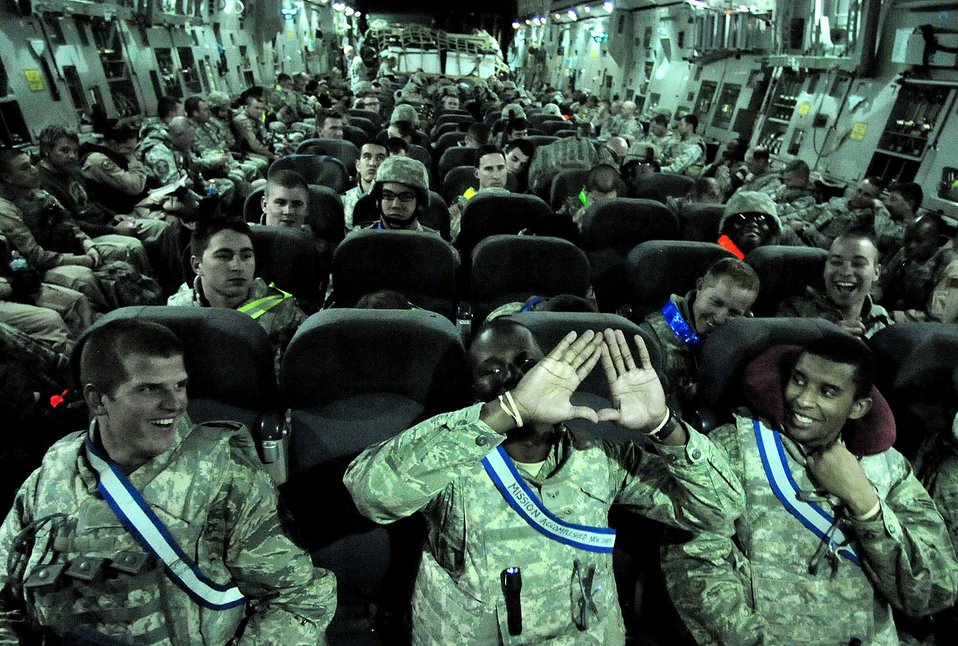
Last Airmen flying out of Iraq

Staff Sgt. Michael Braach (left), Airman 1st Class Irving Adams (middle) and Senior Airman Wally Carney clown around before take-off Dec. 18, 2011, on a C-17 Globemaster III at Ali Air Base, Iraq. The Airmen are the last service members to redeploy from Iraq based on the Iraq and U.S. 2008 Security Agreement that required all U.S. service members to be out of the country by Dec. 31. Braach, Adams and Carney are firefighters assigned to the 407th Air Expeditionary Group.